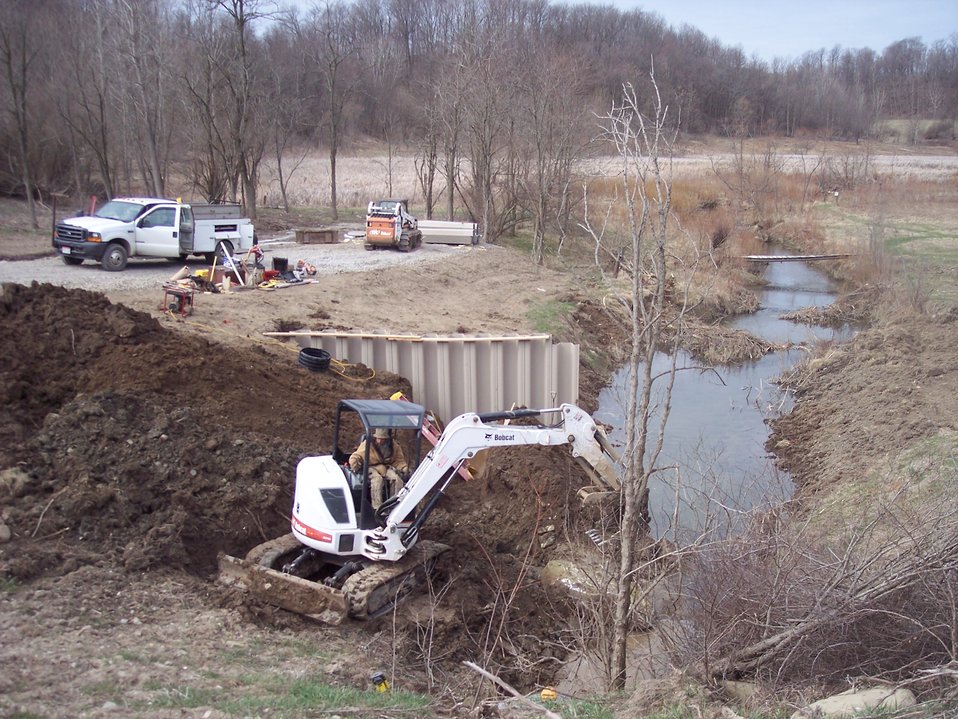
Construction of ditch plug for wetland restoration